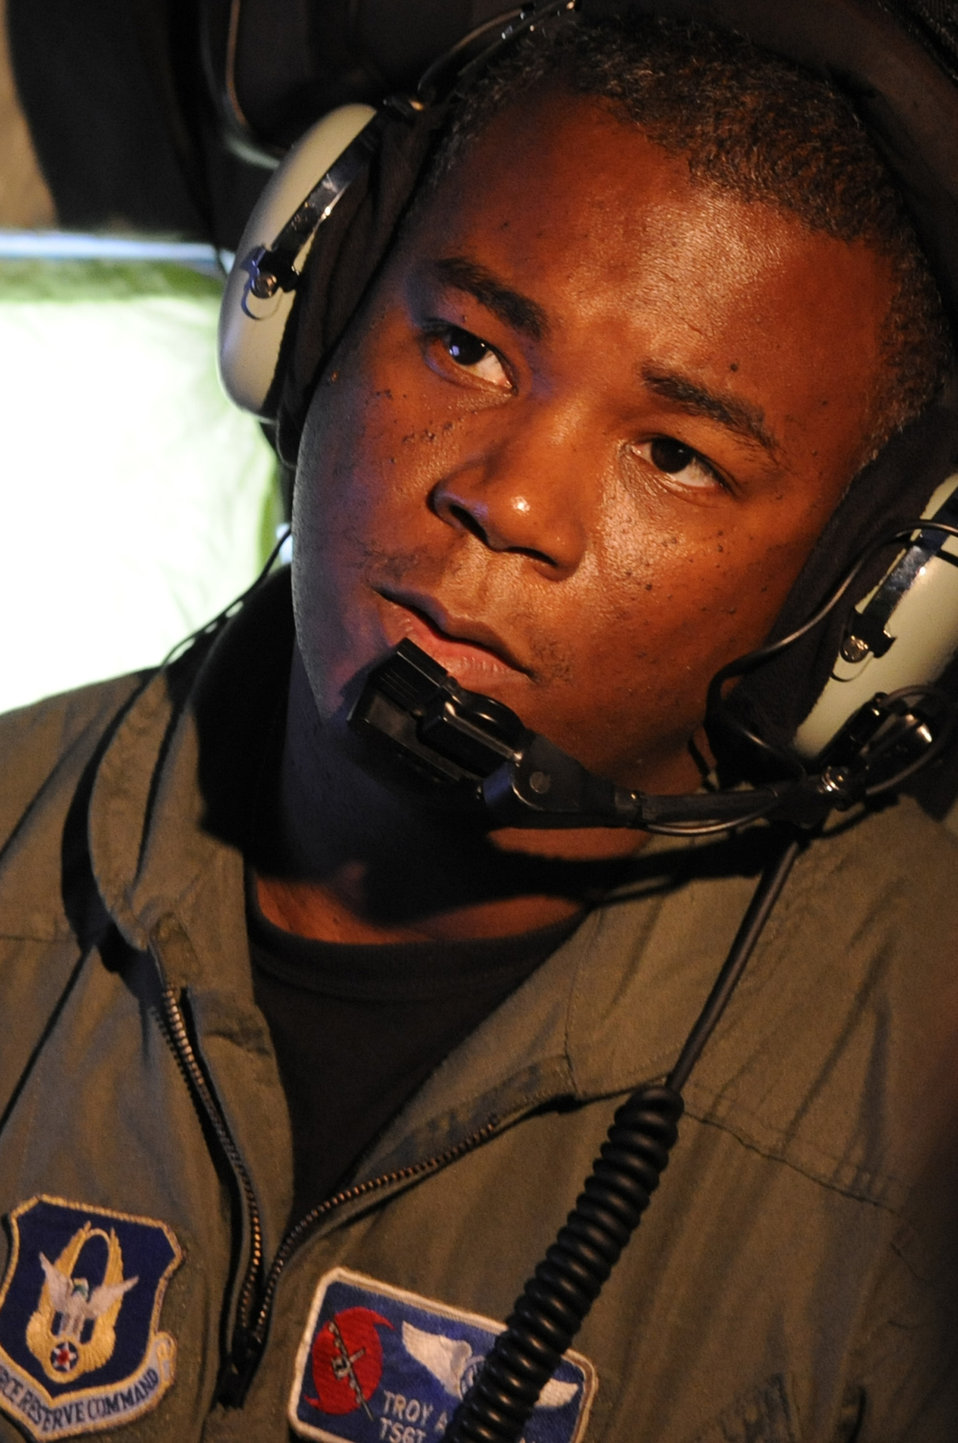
More than a loadmaster

Tech. Sgt. Troy Bickham is a weather reconnaissance loadmaster assigned to the 53rd Weather Reconnaissance Squadron. He is with the Air Force Reserve Command's